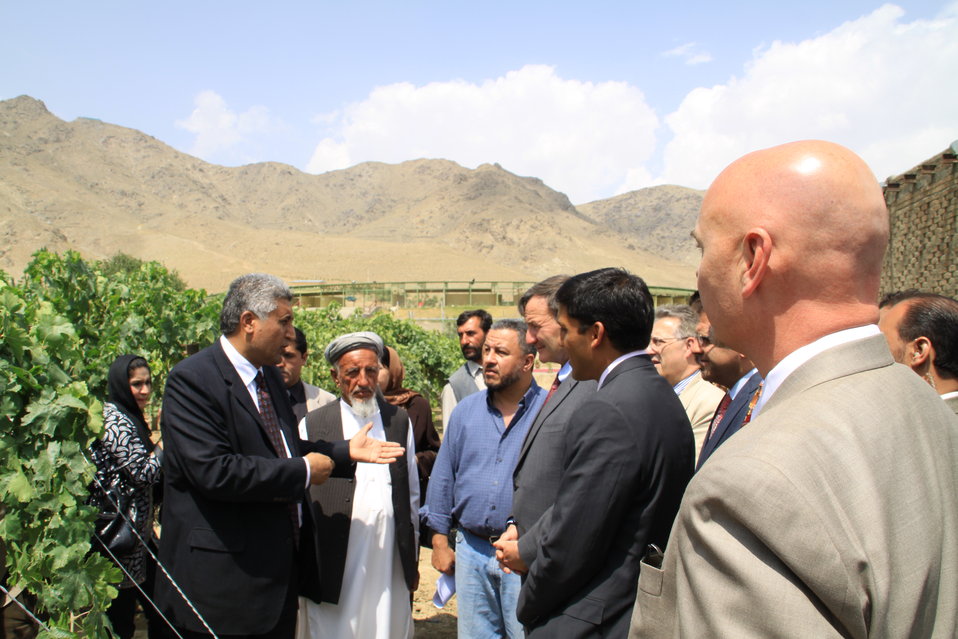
Badam Bagh Farm